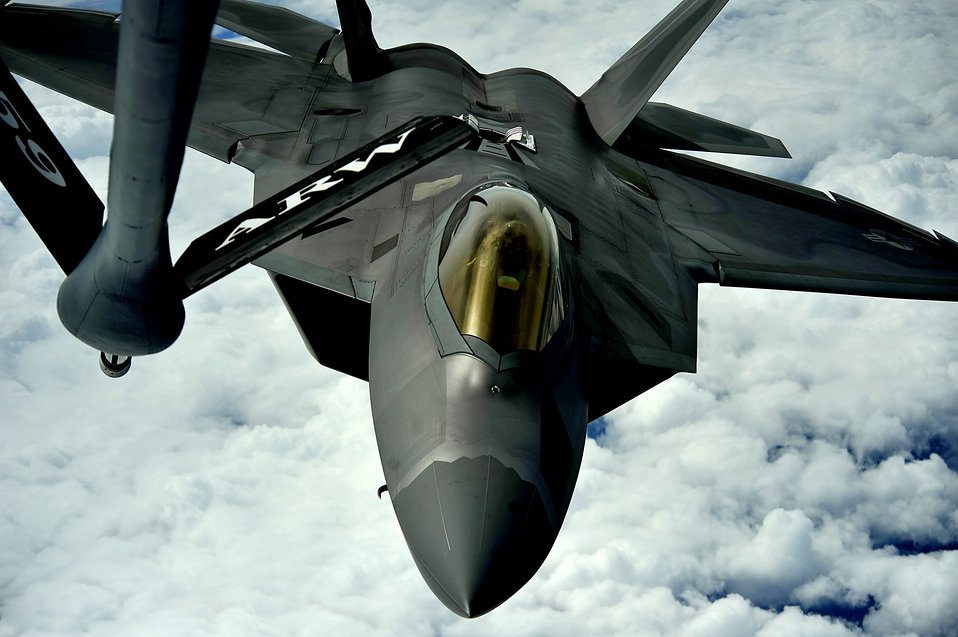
F-22 Raptor

A 1st Fighter Wing's F-22 Raptor from Joint Base Langley-Eustis, Va. pulls into position to accept fuel from a KC-135 Stratotanker with the 756th Air Refueling Squadron, Joint Base Andrews Naval Air Facility, Md. off the east coast on May 10, 2012. The first Raptor assigned to the Wing arrived Jan. 7, 2005. This aircraft was allocated as a trainer, and was docked in a hanger for maintenance personnel to familiarize themselves with its complex systems. The second Raptor, designated for flying operations, arrived Jan. 18, 2005. On Dec. 15, 2005, Air Combat Command commander, along with the 1 FW commander, announced the 27th Fighter Squadron as fully operational capable to fly, fight and win with the F-22. (U.S. Air Force Photo by: Master Sgt. Jeremy Lock)